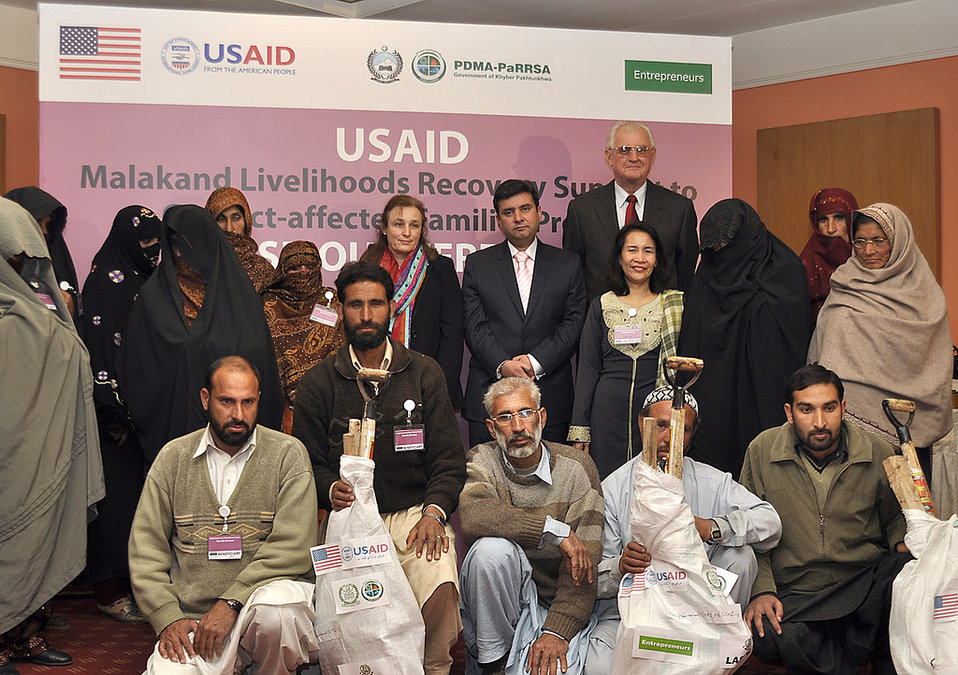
USAID's Malakand Livelihoods Recovery Support to Conflict-affected Families Project

Peshawar, January 29, 2011 - Ms. Constance Arvis, Acting U.S. Consul General in Peshawar; Mr. Edward Birgells, Regional Director, U.S. Agency for International Development (USAID), Pakistan; Mr. Shakeel Qadir Khan, Director General, Provincial Reconstruction, Rehabilitation and Settlement Authority (PaRRSA), Government of Khyber Pakhtunkhwa; and Ms. Agnes Luz, Chief of Party, USAID Entrepreneurs Project with the beneficiaries of the Malakand Livelihoods Recovery Support to Conflict-affected Families Project.